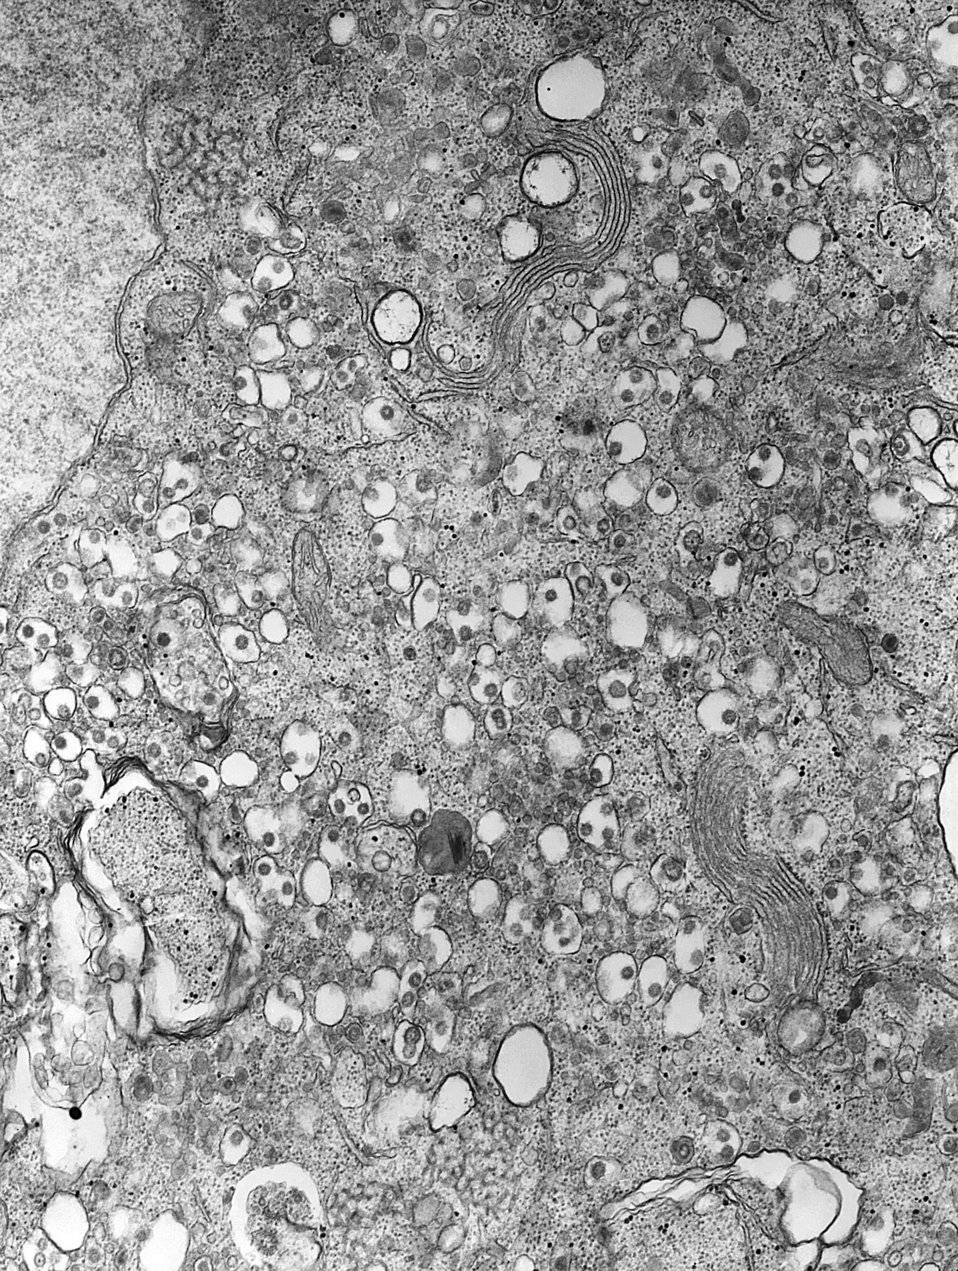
This negatively-stained transmission electron micrograph (TEM) revealed the presence of numerous coronavirus virions in this tissue sample. Coronavirus is a member of the virus family, Coronaviridae, which at their core contain a positive-sense single-stranded RNA genome (( ) ssRNA). Under electronmicrographic examination, the envelope surrounding each virion is studded with a 'corona' of points, hence the derivation of its name, which are actually proteinaceous in nature, and are outcroppings of its envelope's molecular structure.Coronaviruses infect mammals and birds with upper respiratory and gastrointestinal illnesses. The most well-known member of this virus family is the human coronavirus responsible for causing severe acute respiratory syndrome (SARS).